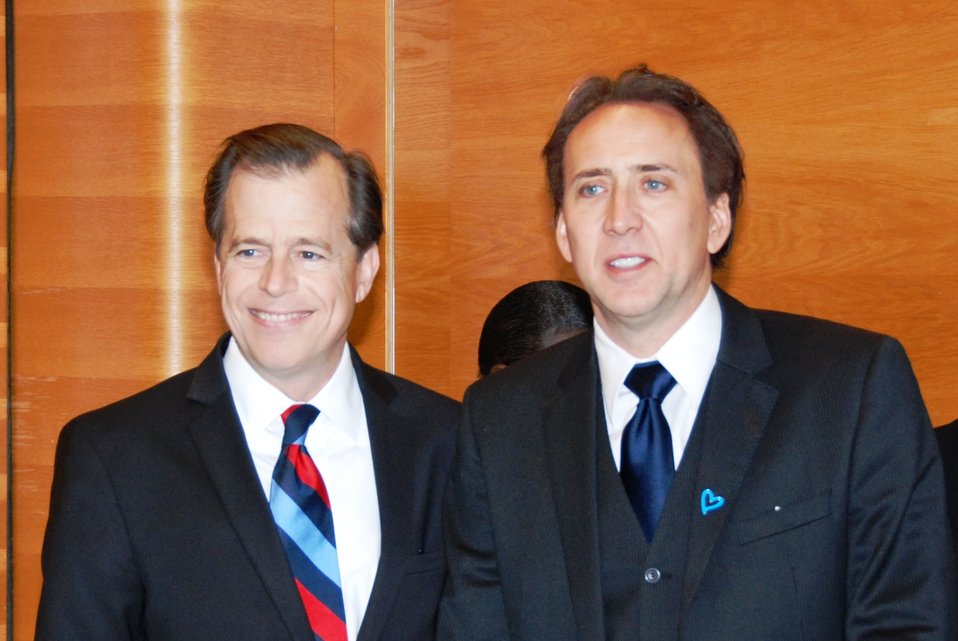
Ambassador Davies Hosts Lunch in Honor of Nicolas Cage

Ambassador Glyn Davies of the U.S. Mission to International Organizations in Vienna hosted a lunch in honor of Nicolas Cage, Goodwill Ambassador for Global Justice for the United Nations Office on Drugs and Crime, in Vienna, Austria, on October 21, 2010.